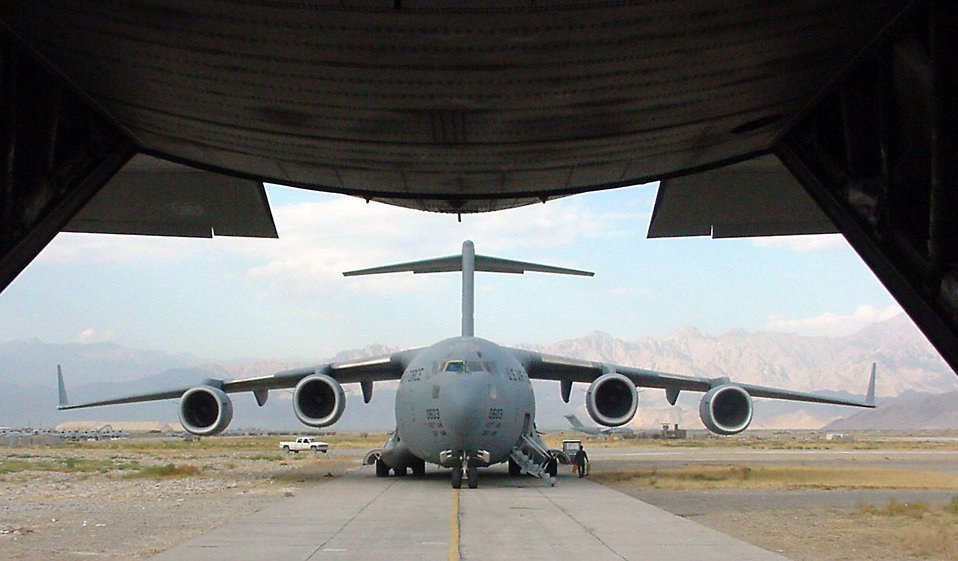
Behind you

BAGRAM AIR BASE, Afghanistan -- A C-17 Globemaster III parks behind a C-130 Hercules on the flightline here Aug. 22. C-17s are used extensively to deliver supplies and people to various forward-deployed locations throughout Southwest Asia.